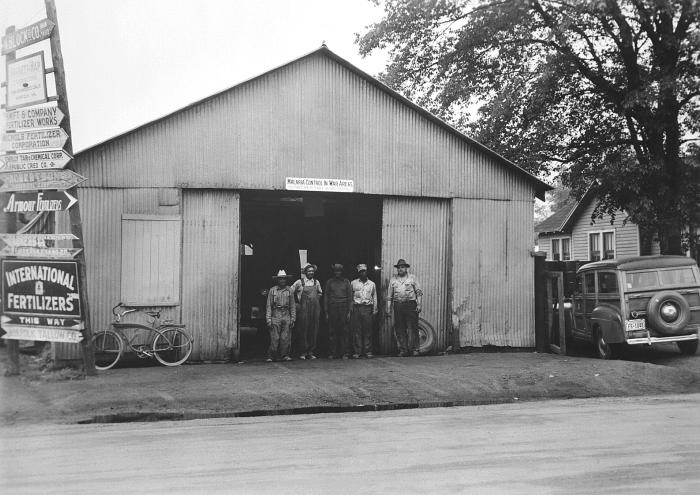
This was a building which housed members of the Malaria Control in War Areas (MCWA) program.